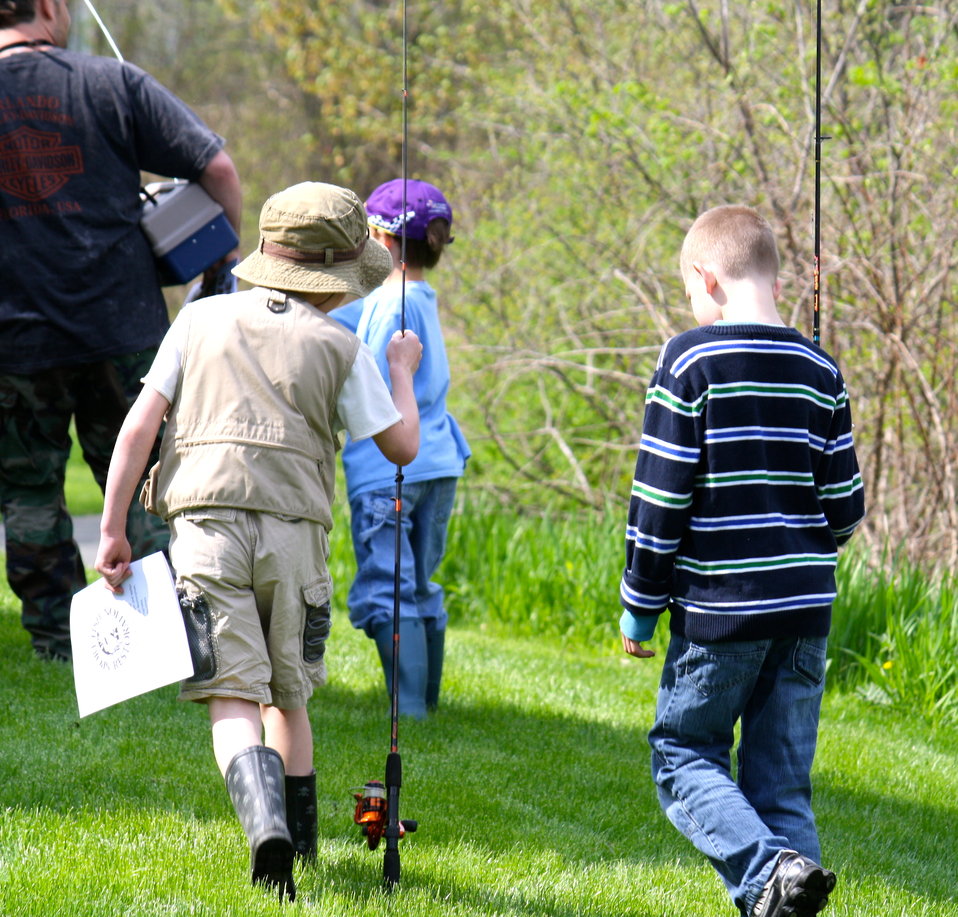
Kids carrying their poles

Getting ready to fish at the Fishing Derby held at the USFWS regional office in Hadley, MA on May 7, 2011.